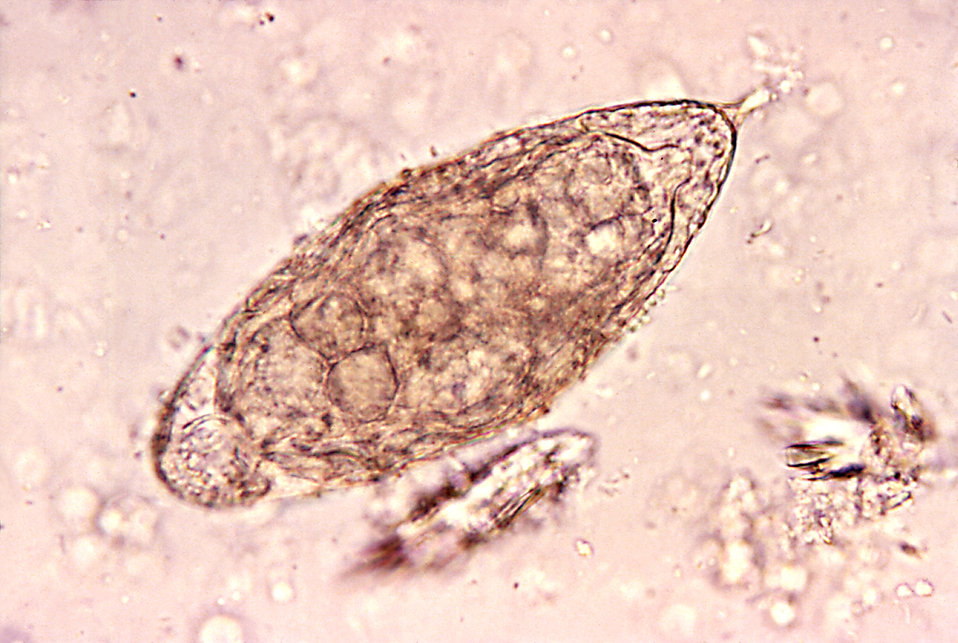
This micrograph depicts an egg from a Schistosoma haematobium trematode parasite; magnified 500x. Note the egg's posteriorly-protruding spine, unlike the spinal remnant, which protrudes from the lateral wall of the Schistosoma japonicum egg.